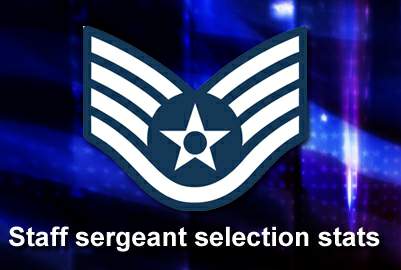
Air Force officials release staff sergeant selection statistics

Air Force officials here selected 15,223 of 30,574 eligible senior airmen for promotion to staff sergeant for a selection rate of 49.79 percent that will released at 8 a.m. CST Aug. 20.